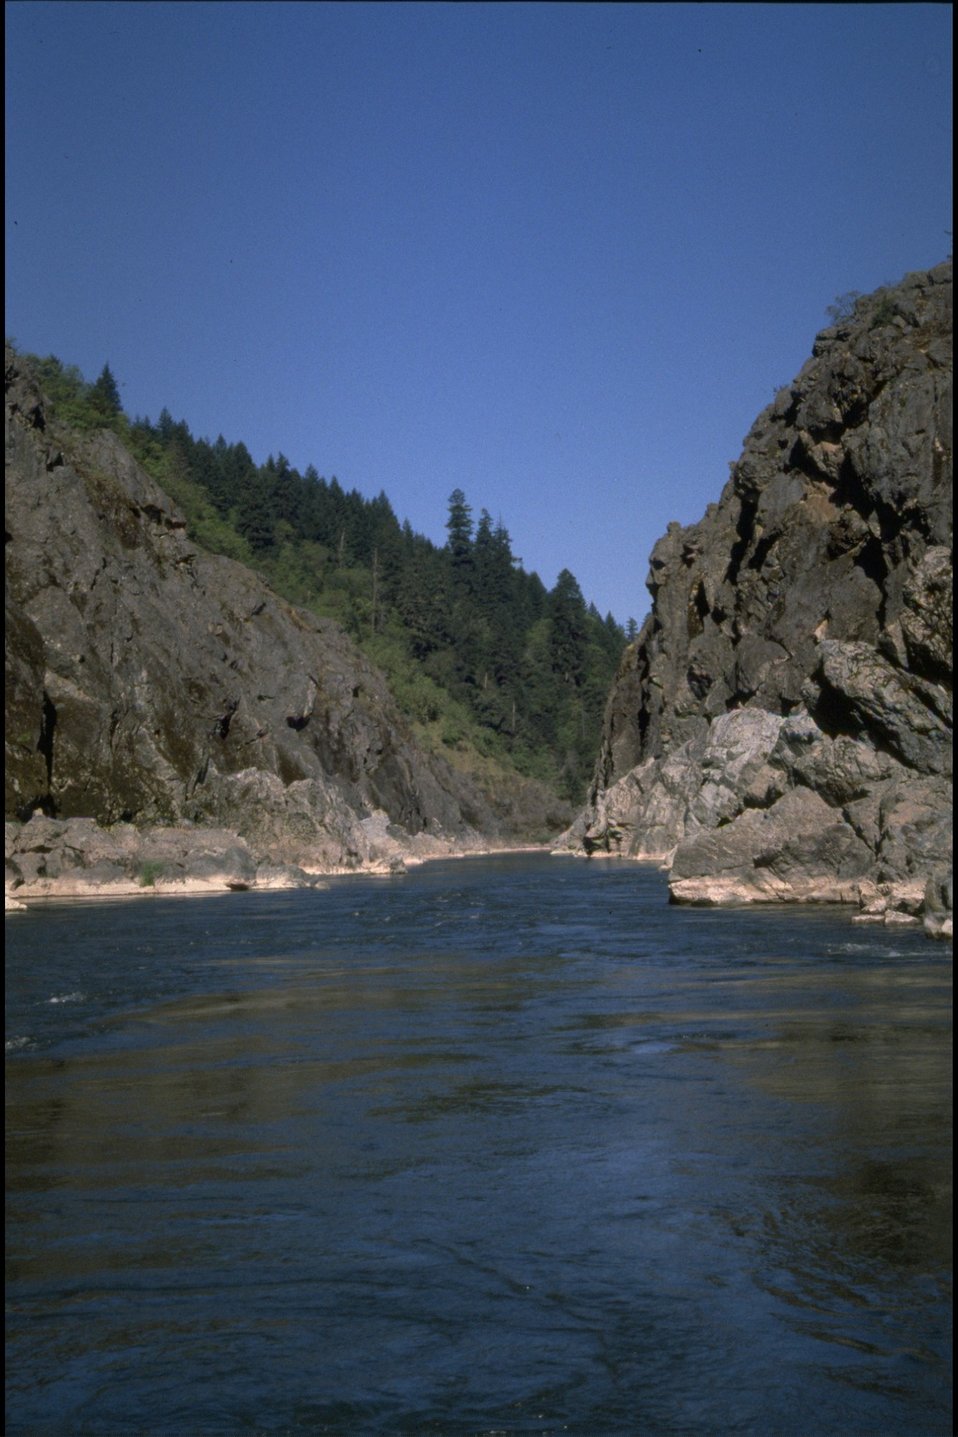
Rogue River - Hellgate Canyon